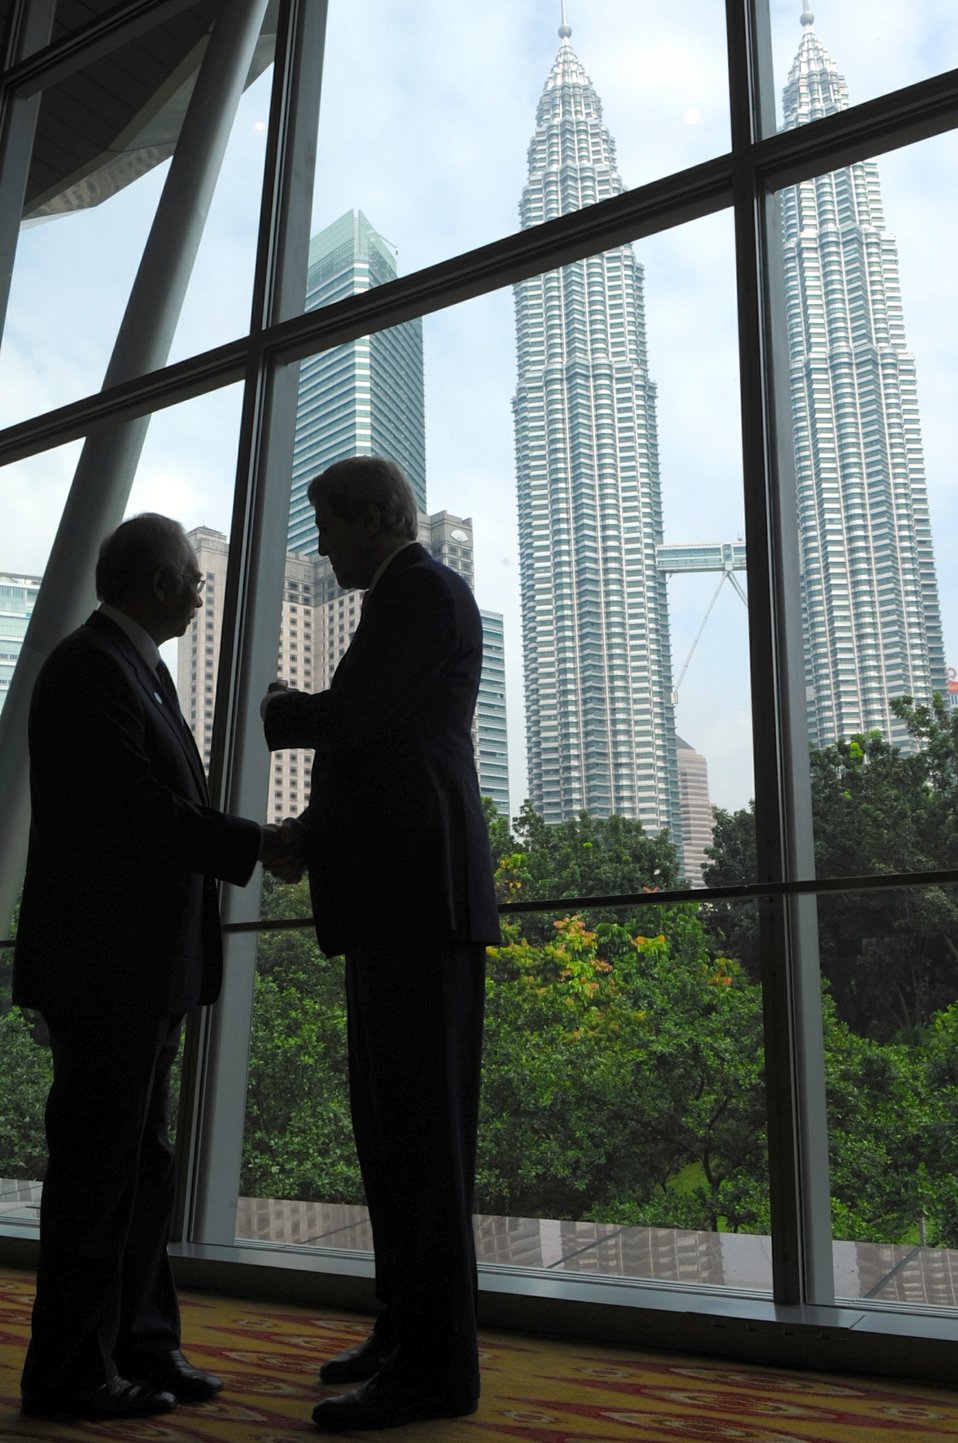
Secretary Kerry, Prime Minister Najib Speak Before Petronas Towers

U.S. Secretary of State John Kerry and Malaysian Prime Minister Najib Razak stand silhouetted against the Petronas Towers after touring the Innovation Showcase, held as part of the Global Entrepreneurship Summit in Kuala Lumpur on October 11, 2013.